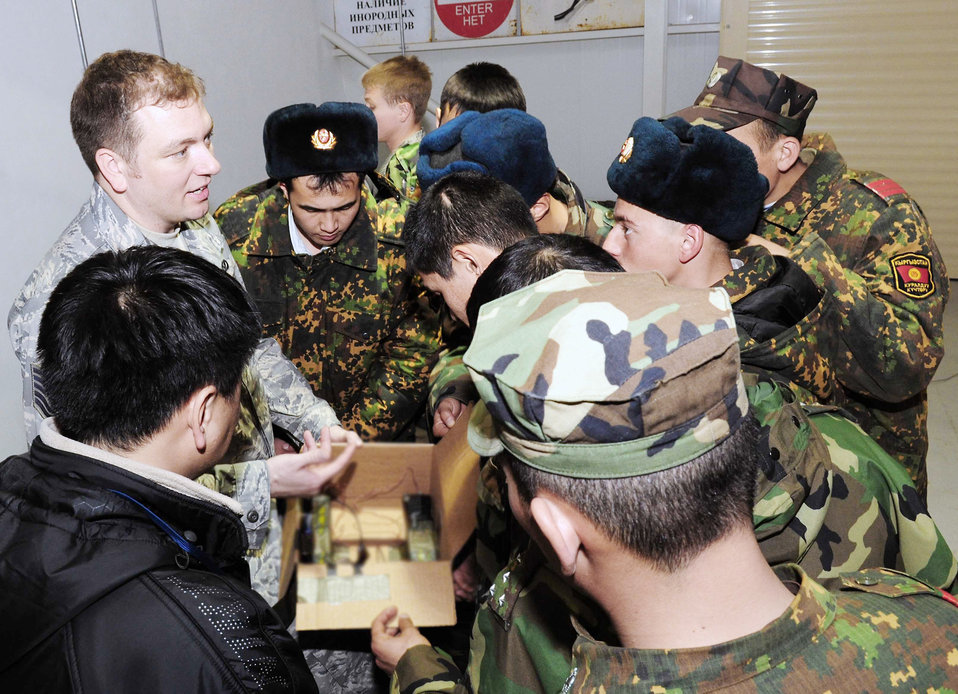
Joint EOD training benefits 2 nations

Tech. Sgt. Michael Yates compares a simulated improvised explosive device to its X-ray with Kyrgyz army explosive ordnance disposal technicians during a subject matter information exchange March 16, 2010, at the Transit Center at Manas, Kyrgyzstan. Sergeant Yates is the 376th Expeditionary Civil Engineer Squadron EOD Flight chief.